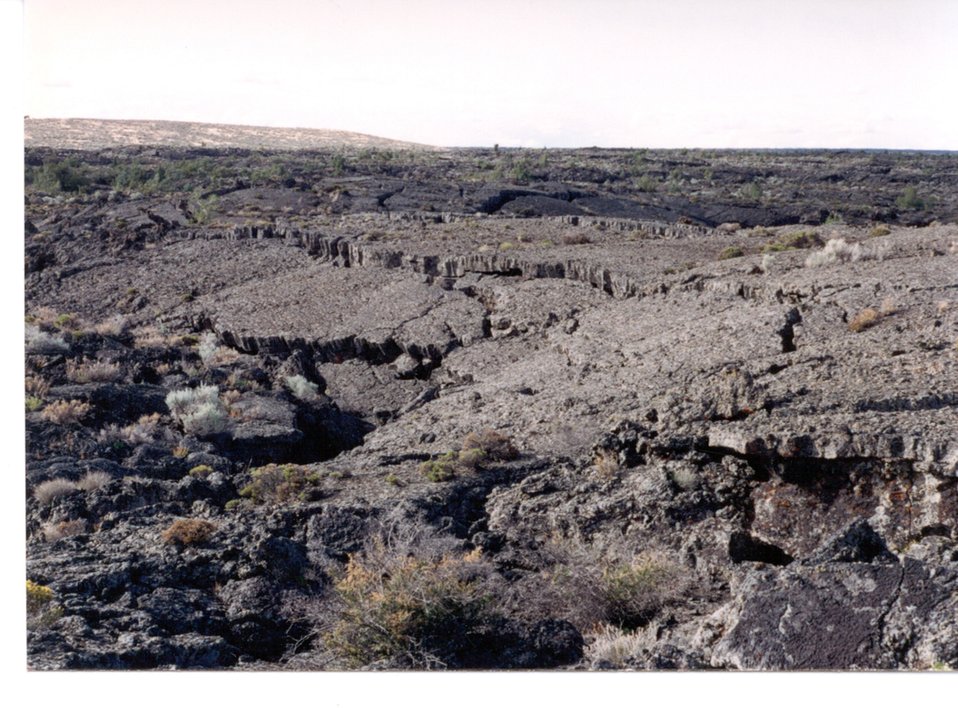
Wapi Flow Craters of the Moon Shoshone Field Office USRD Upper Snake River District